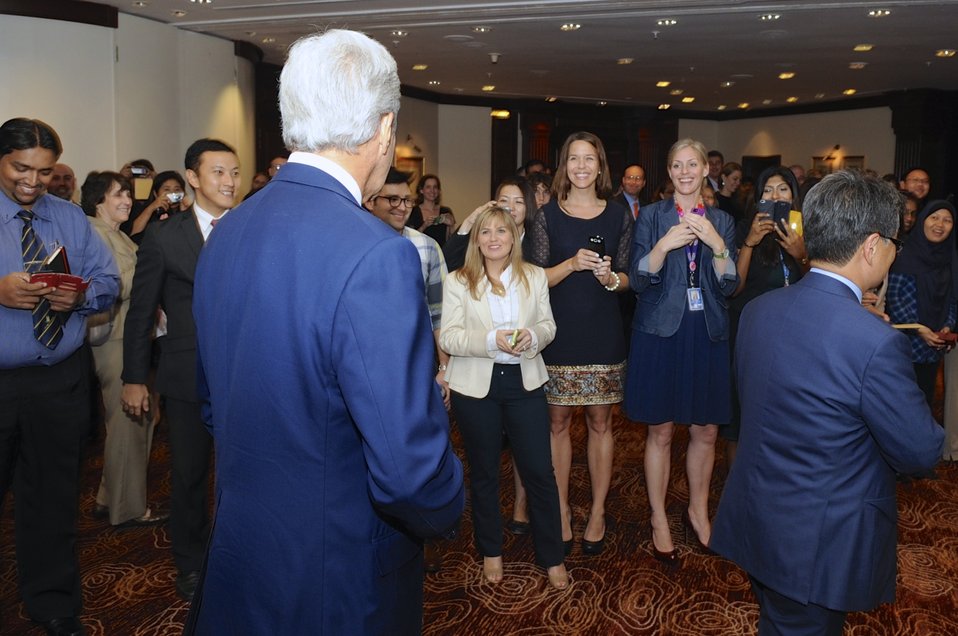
Embassy Kuala Lumpur Staffers Greet Secretary Kerry

Staffers from the U.S. Embassy in Kuala Lumpur greet U.S. Secretary of State John Kerry before he addresses them during his first visit to Malaysia on October 10, 2013.